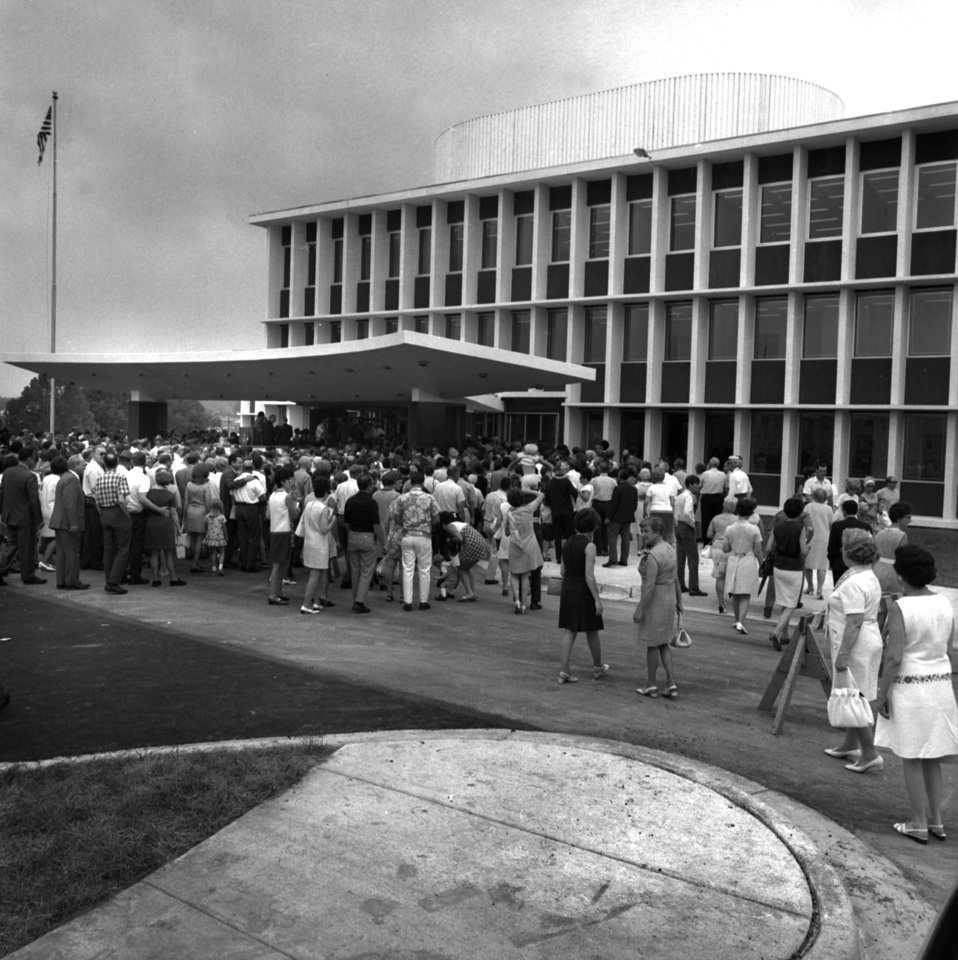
Formal Dedication New AEC (Atomic Energy Commision) - FOB (Federal Office Building) Oak Ridge

70-165n DOE Photo by Frank Hoffman Formal Dedication New AEC (Atomic Energy Commision) - FOB (Federal Office Building) Oak Ridge Tennessee 6-27-1970